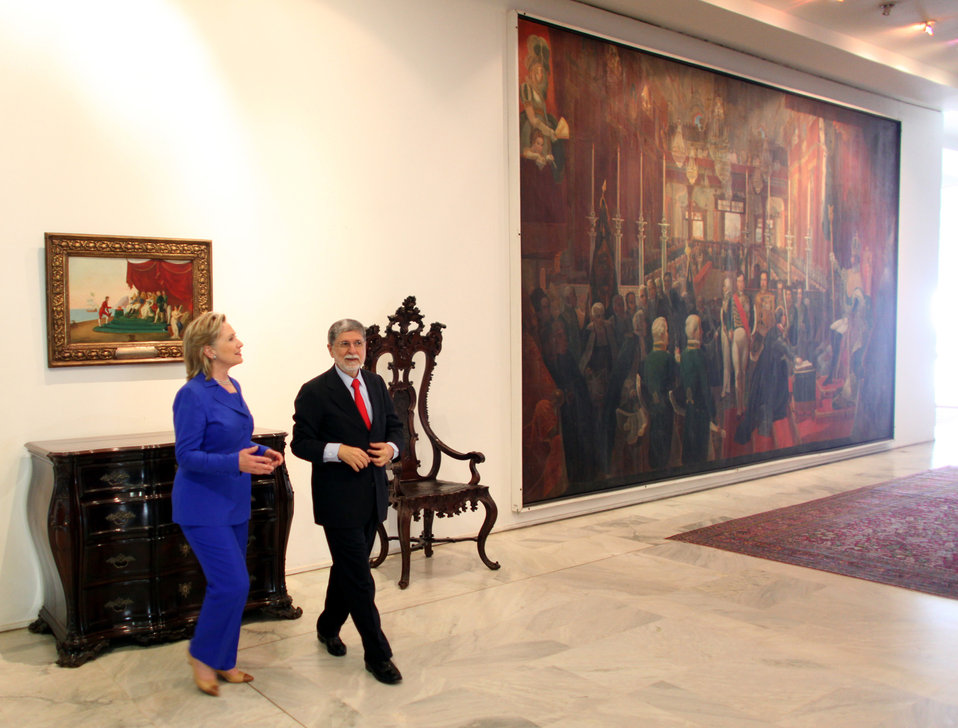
Secretary Clinton With Foreign Minister Celso Amorim

U.S. Secretary of State Hillary Rodham Clinton meets with Foreign Minister Celso Amorim in Brasília, Brazil March 3, 2010.